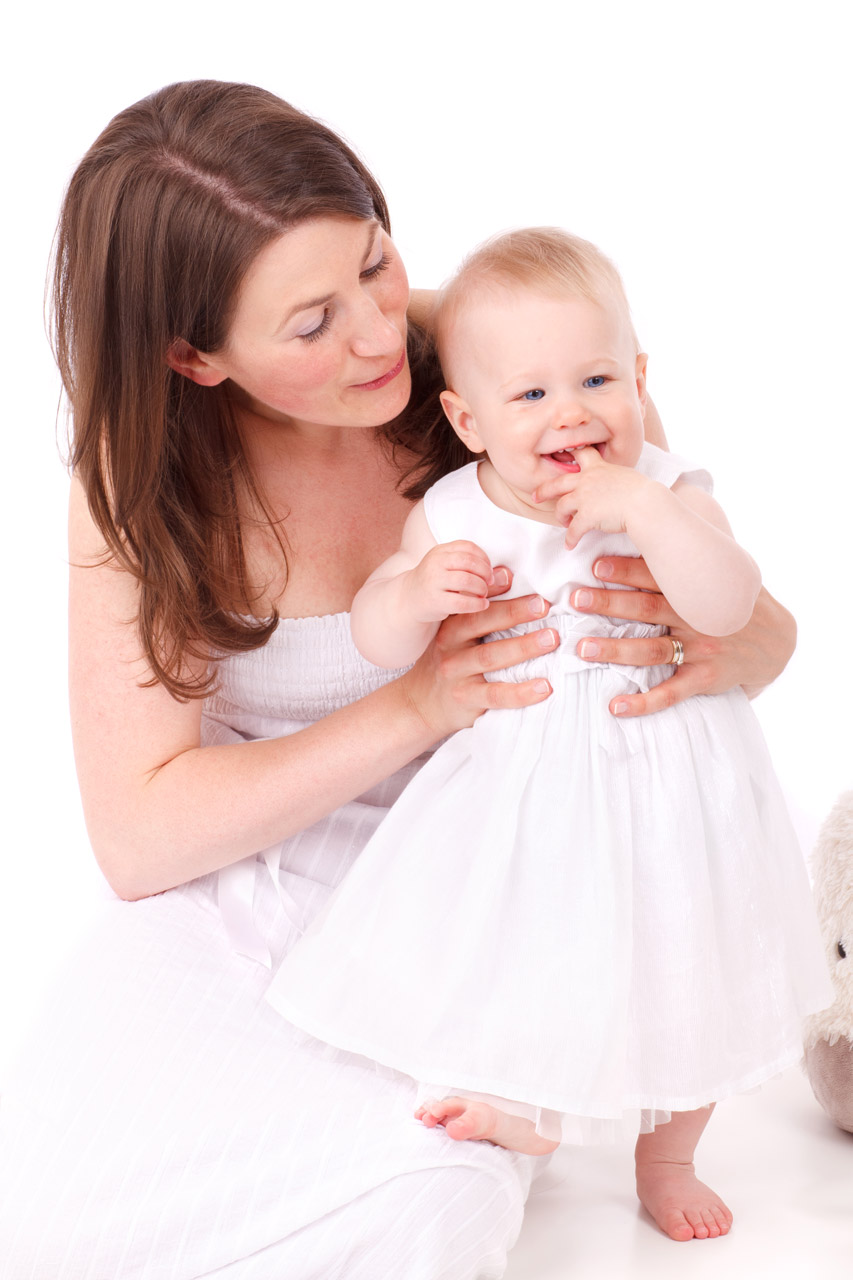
Mother looking at baby

Mother looking at her baby daughter isolated on white background.